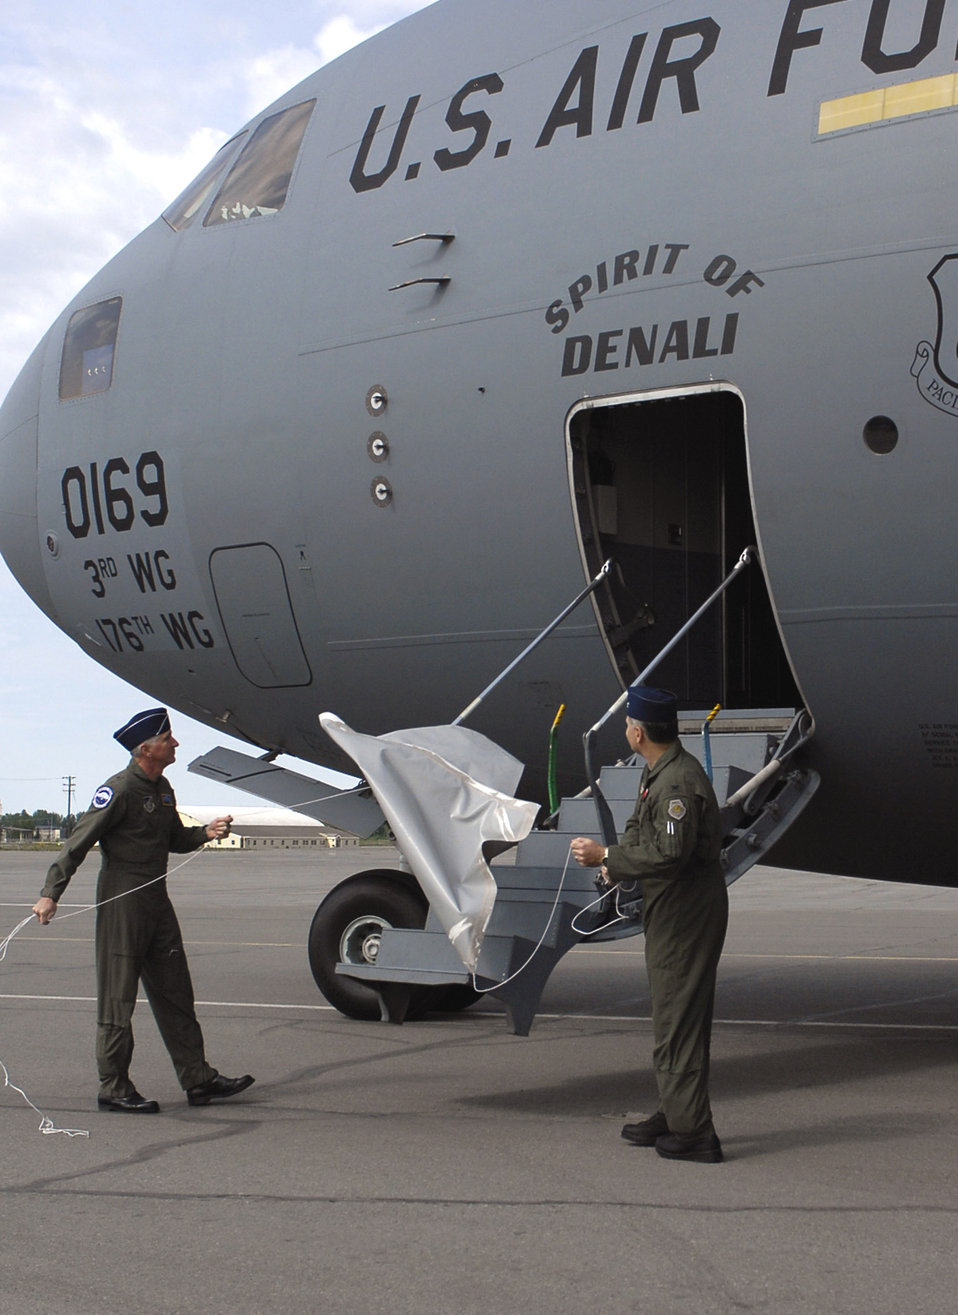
Elmendorf celebrates C-17 arrival

Brig. Gen. Tony Hart and Col. Tom Tinsley, 176th Wing and 3rd Wing commanders, unveil the name of Elmendorf's first C-17 Globemaster III during a ceremony June 11 at Elmendorf Air Force Base, Alaska. The airlifter replaces the C-130 Hercules mission at Elmendorf and is a new platform for the Alaska Air National Guard.